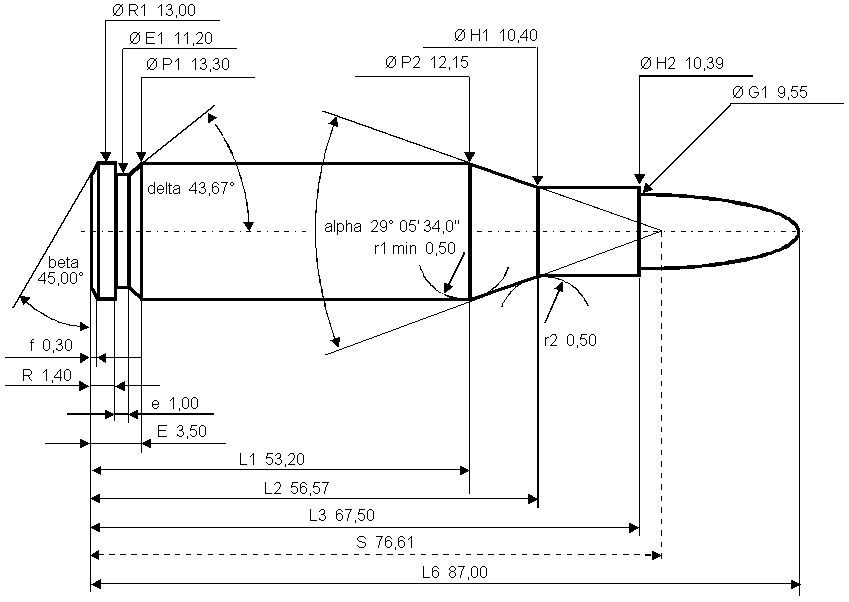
.375 Hölderlin maximum C.I.P. cartridge dimensions. All sizes in millimetres (mm).